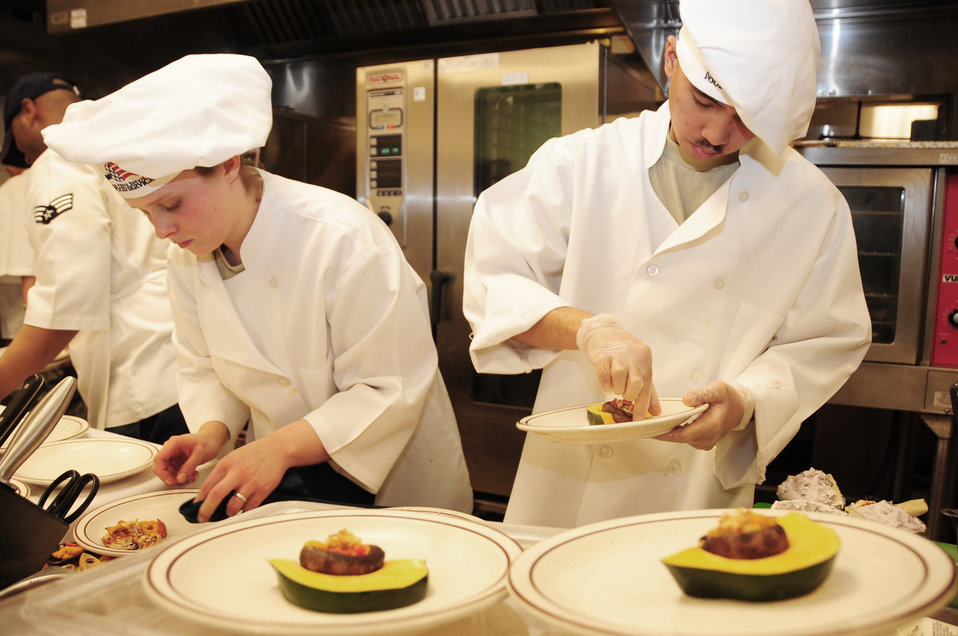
Ellsworth Airmen participate in cooking competition

Airmen 1st Class Sarah Meador (left) and Michael Azares put the final touches on their appetizers during the